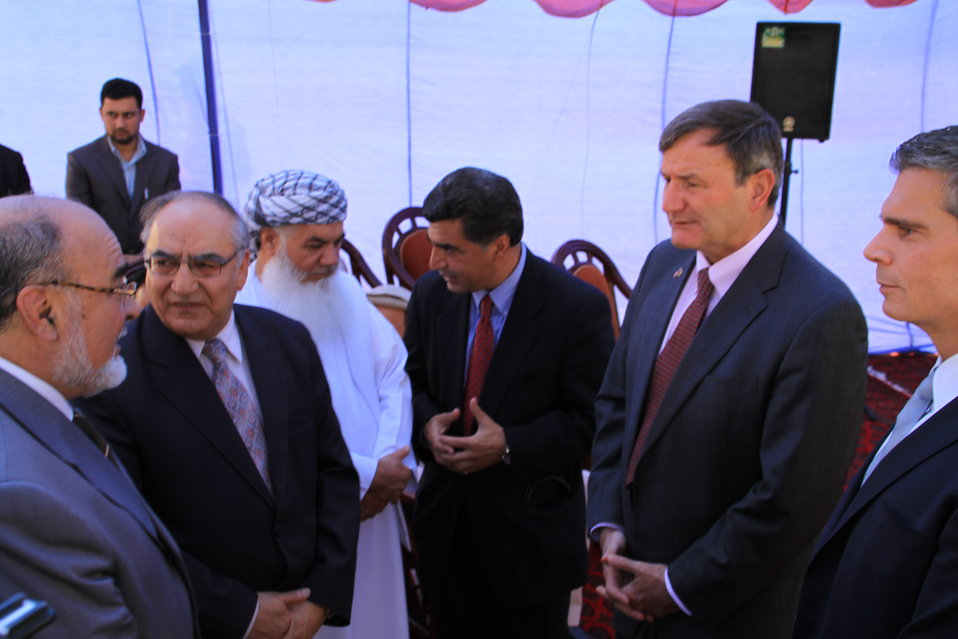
105 MW Tarakhil Power Plant Handover